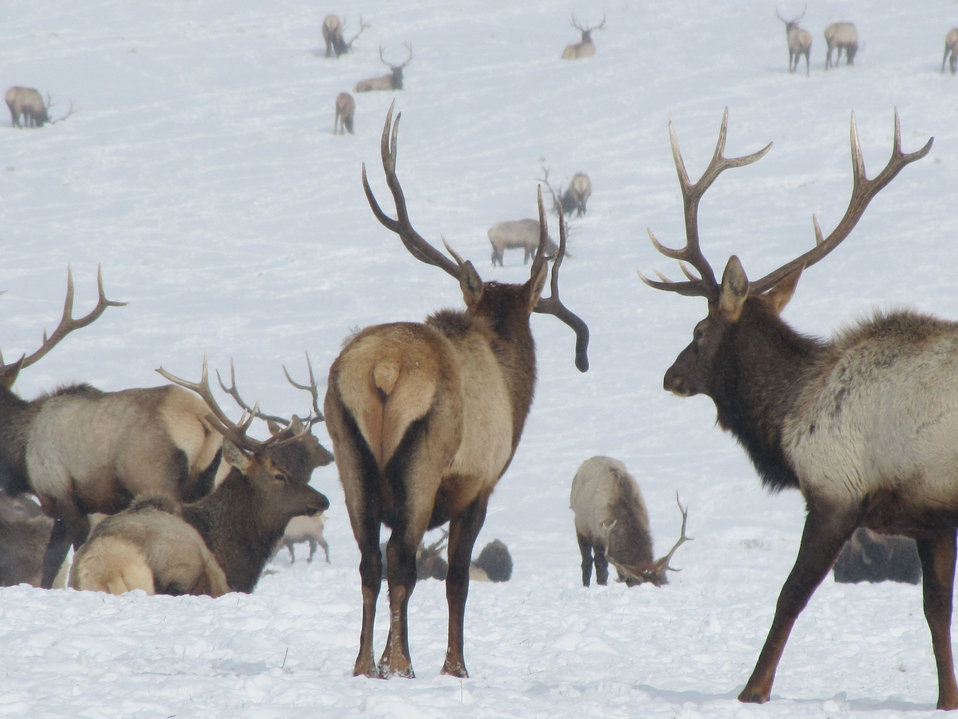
Non-Typical Antler

A bull's non-typical antler can clearly be seen in this view from behind.